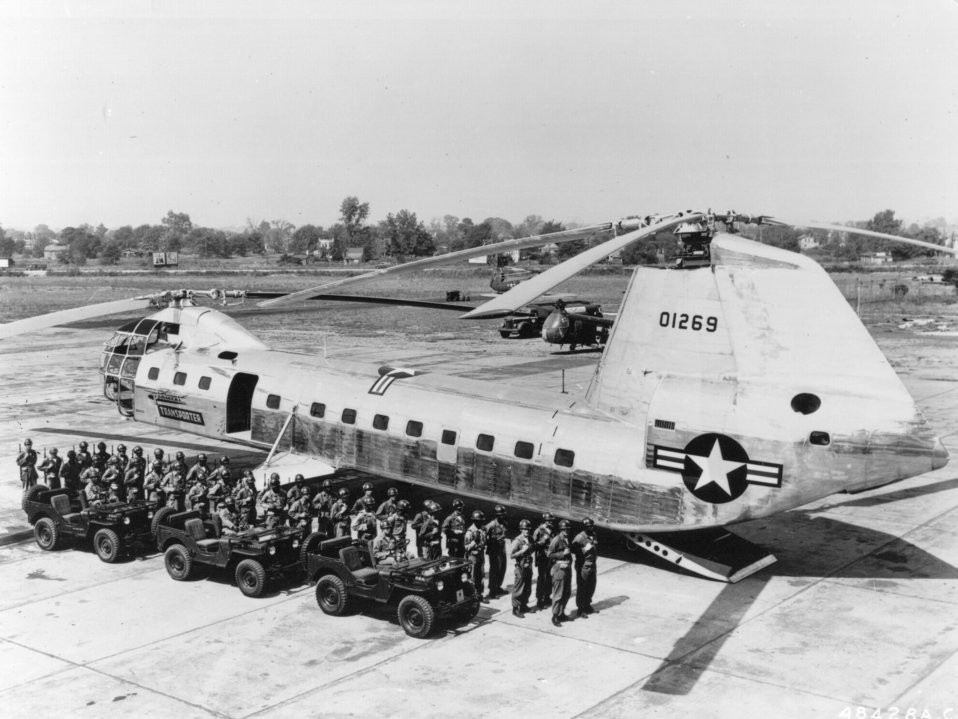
H-16